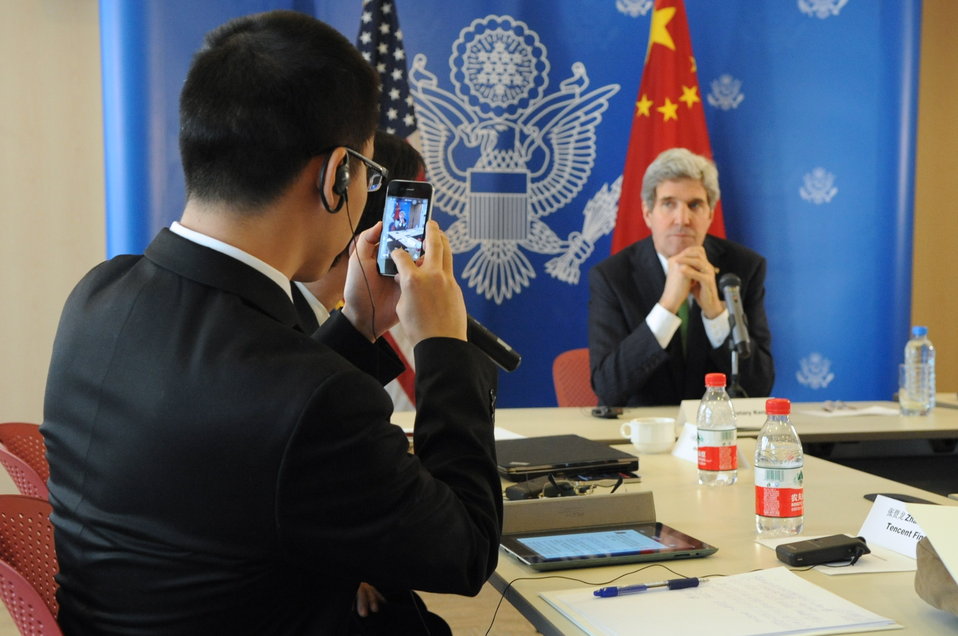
Chinese Reporter Takes Photo of Secretary Kerry

Zhang Jialong, a reporter at Tencent Finance, takes a photograph of U.S. Secretary of State John Kerry as he meets with a group of Chinese bloggers for a roundtable discussion about press freedom and regional issues in Beijing, China on February 15, 2014.